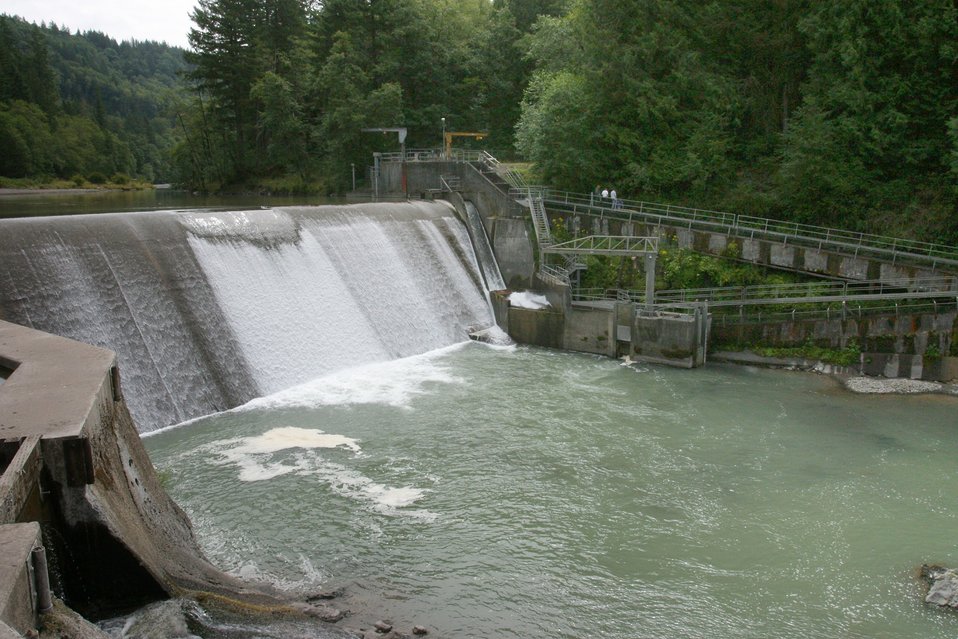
Marmot Dam on the Sandy River is scheduled to be removed in 2006.